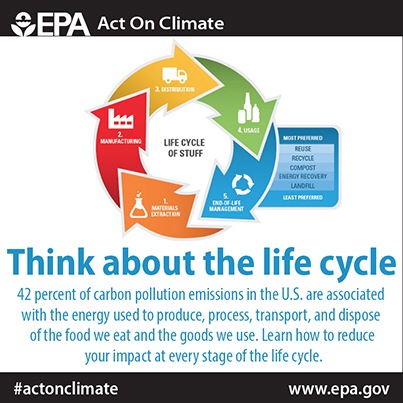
Think About the Life Cycle

Learn how to reduce your impact at every stage of the life cycle to #ActOnClimate.